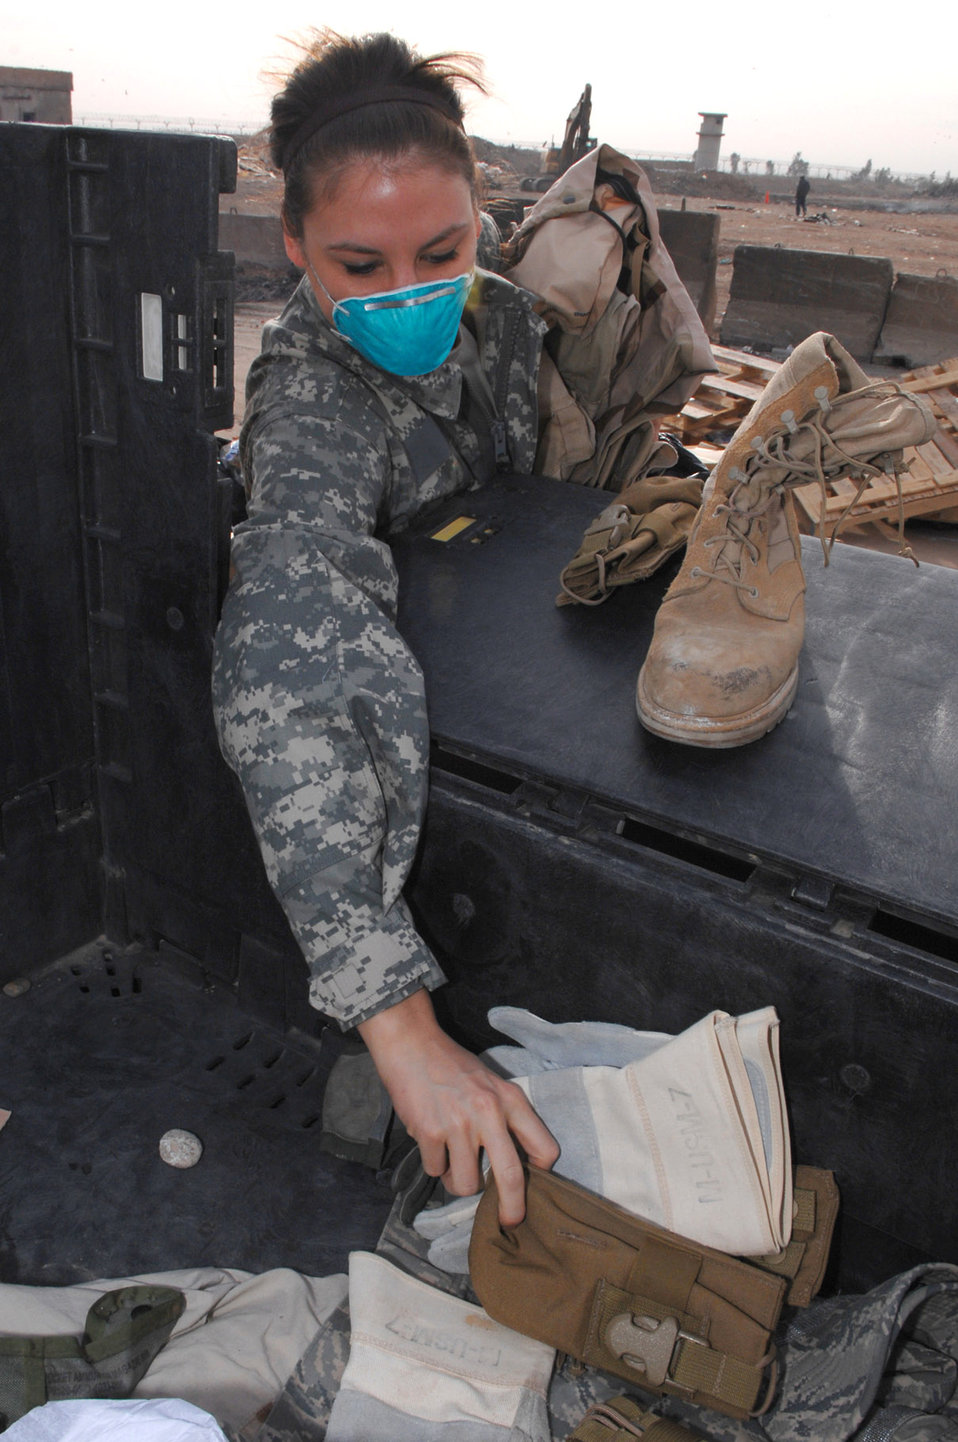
Into the fire

Senior Airman Frances Gavalis gathers up unserviceable uniform items to burn March 10 at Balad Air Base, Iraq. Any servicemember or Department of Defense civilian can drop off items for destruction. Airman Gavalis, a 332nd Expeditionary Logistics Readiness Squadron equipment manager, is deployed from Kirtland Air Force Base, N.M.